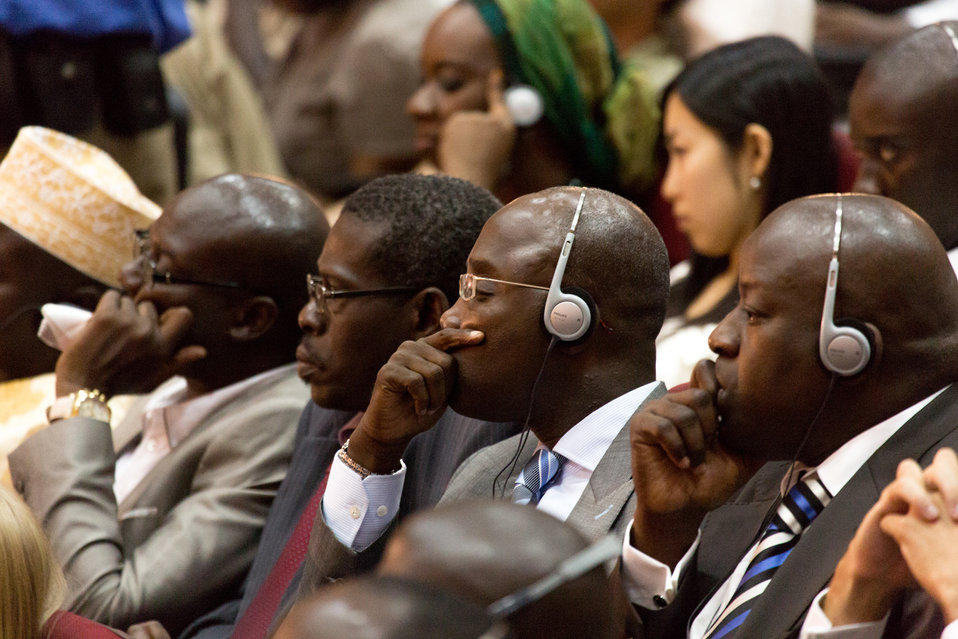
Members of the Audience Listen to Secretary Clinton

Members of the audience listen to U.S. Secretary of State Hillary Rodham Clinton deliver remarks on the U.S. and Senegal: Building Sustainable Partnerships in Dakar, Senegal, on August 1, 2012.